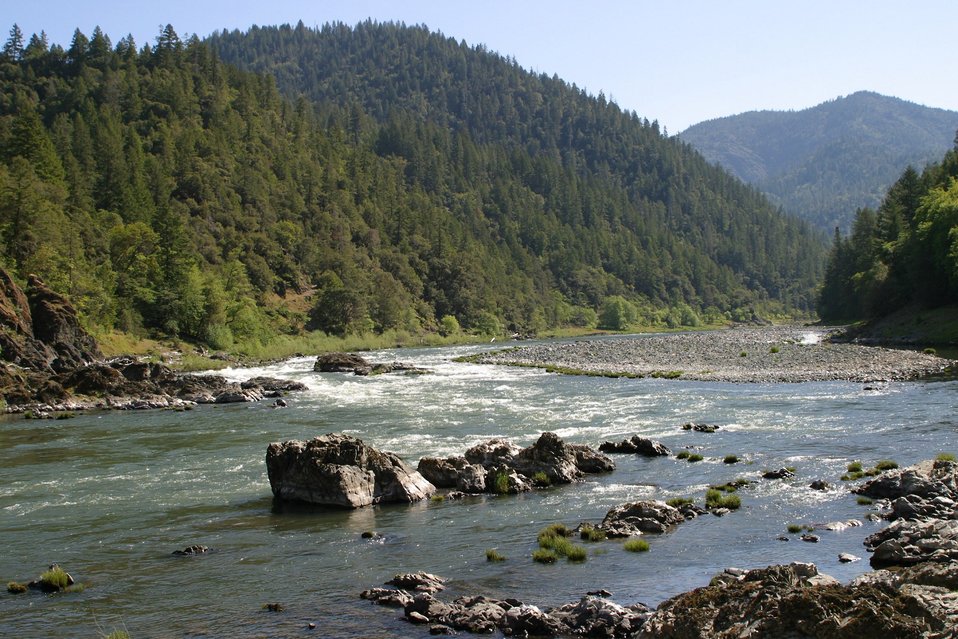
Tyee Rapid on the Wild section of the Rogue River from Grave Creek to Foster Bar May 19 to May 22.